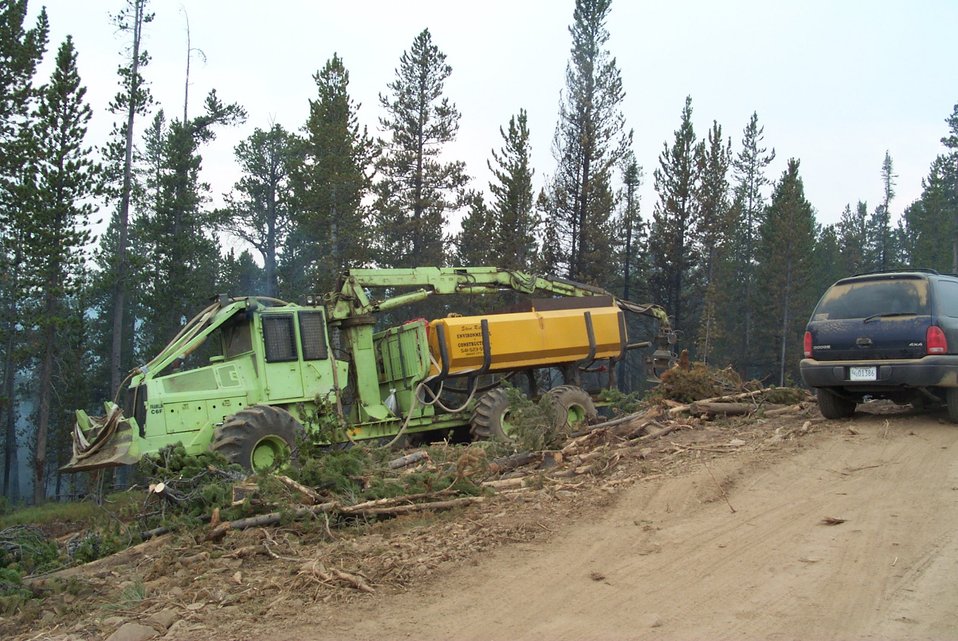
Log remover Heavy equipment Fire Clearwater Fire Salmon Field Office USRD Upper Snake River District